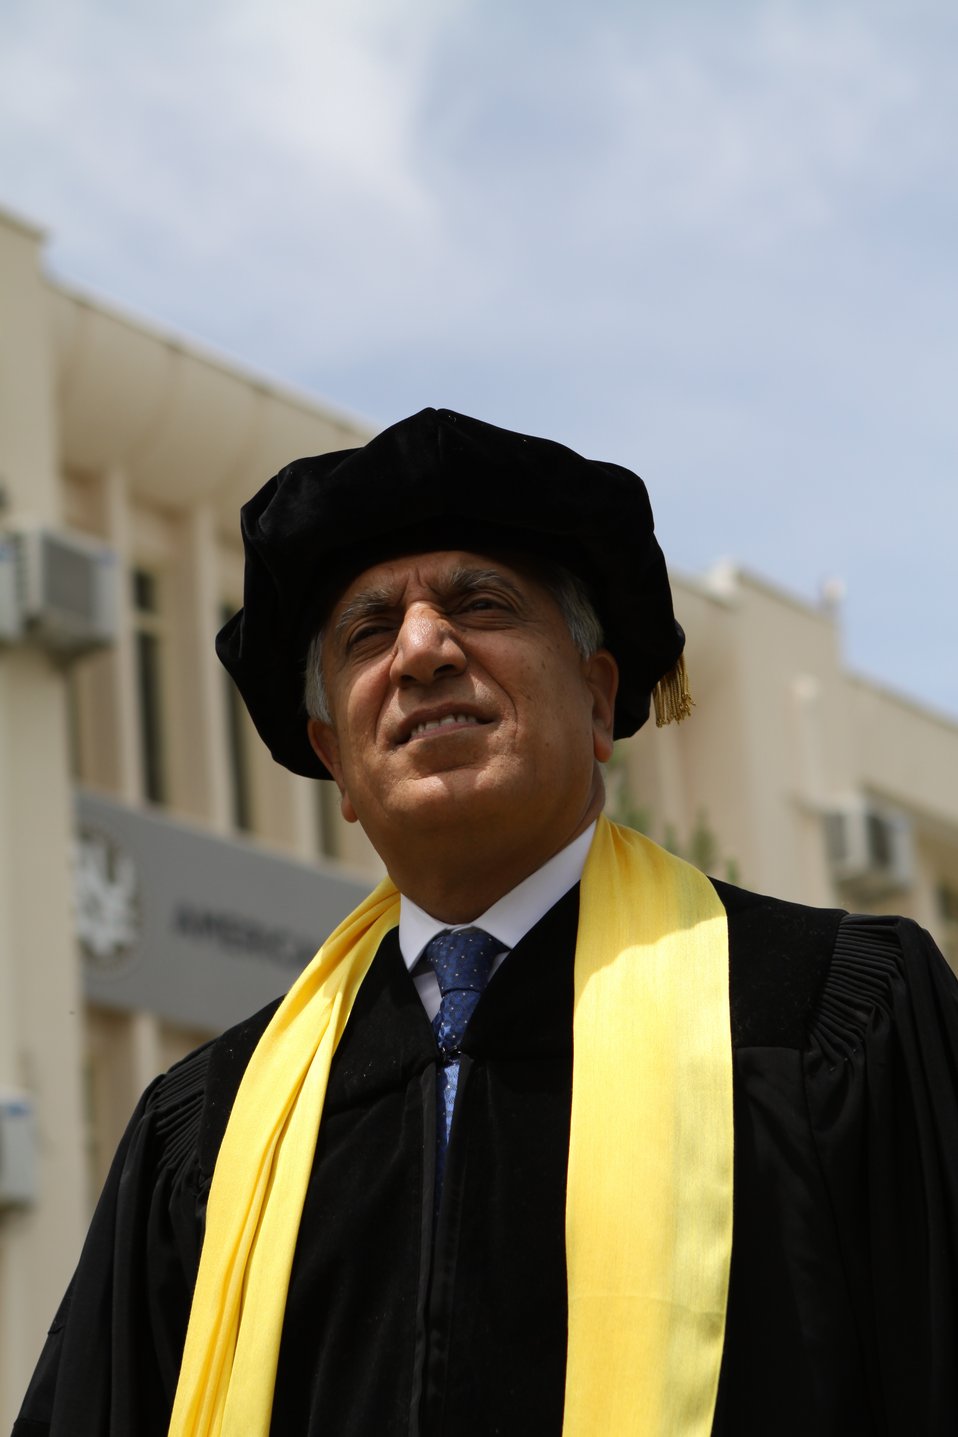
100526 AUAF Graduation 096